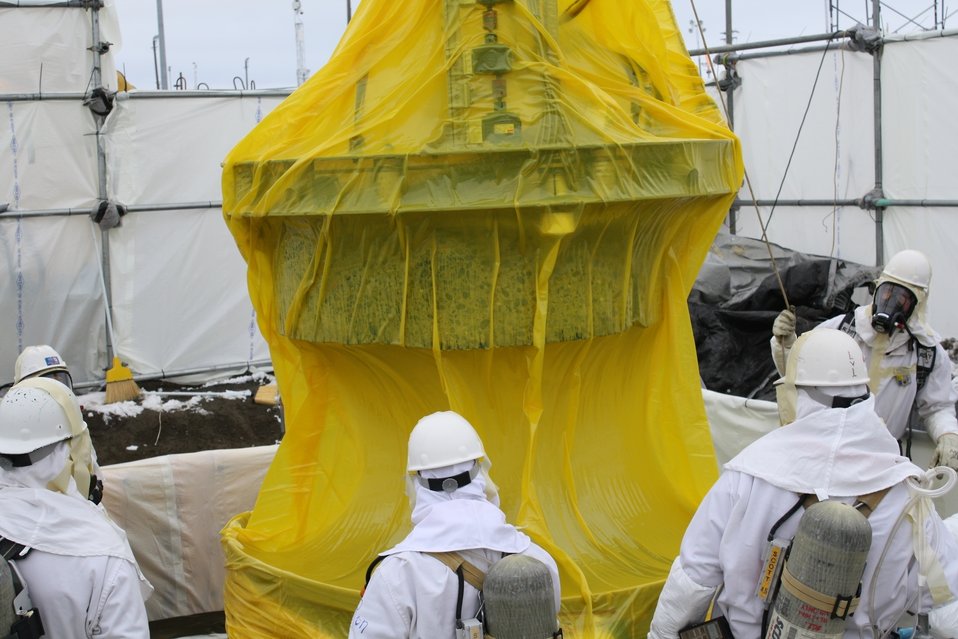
Hanford MARS

Installation of the Mobile Arm Retrieval System (MARS) into Hanford single-shell tank C-107 took another step forward on December 19, 2010 when Tank Farms contractor Washington River Protection Solutions (WRPS) and its subcontractors safely cut a 55-inch diameter hole in the top of the tank. The hole was cut through 15 inches of concrete and steel rebar in order to place a new riser for the MARS unit that will be used to remove approximately 247,000 gallons of radioactive and chemical waste.